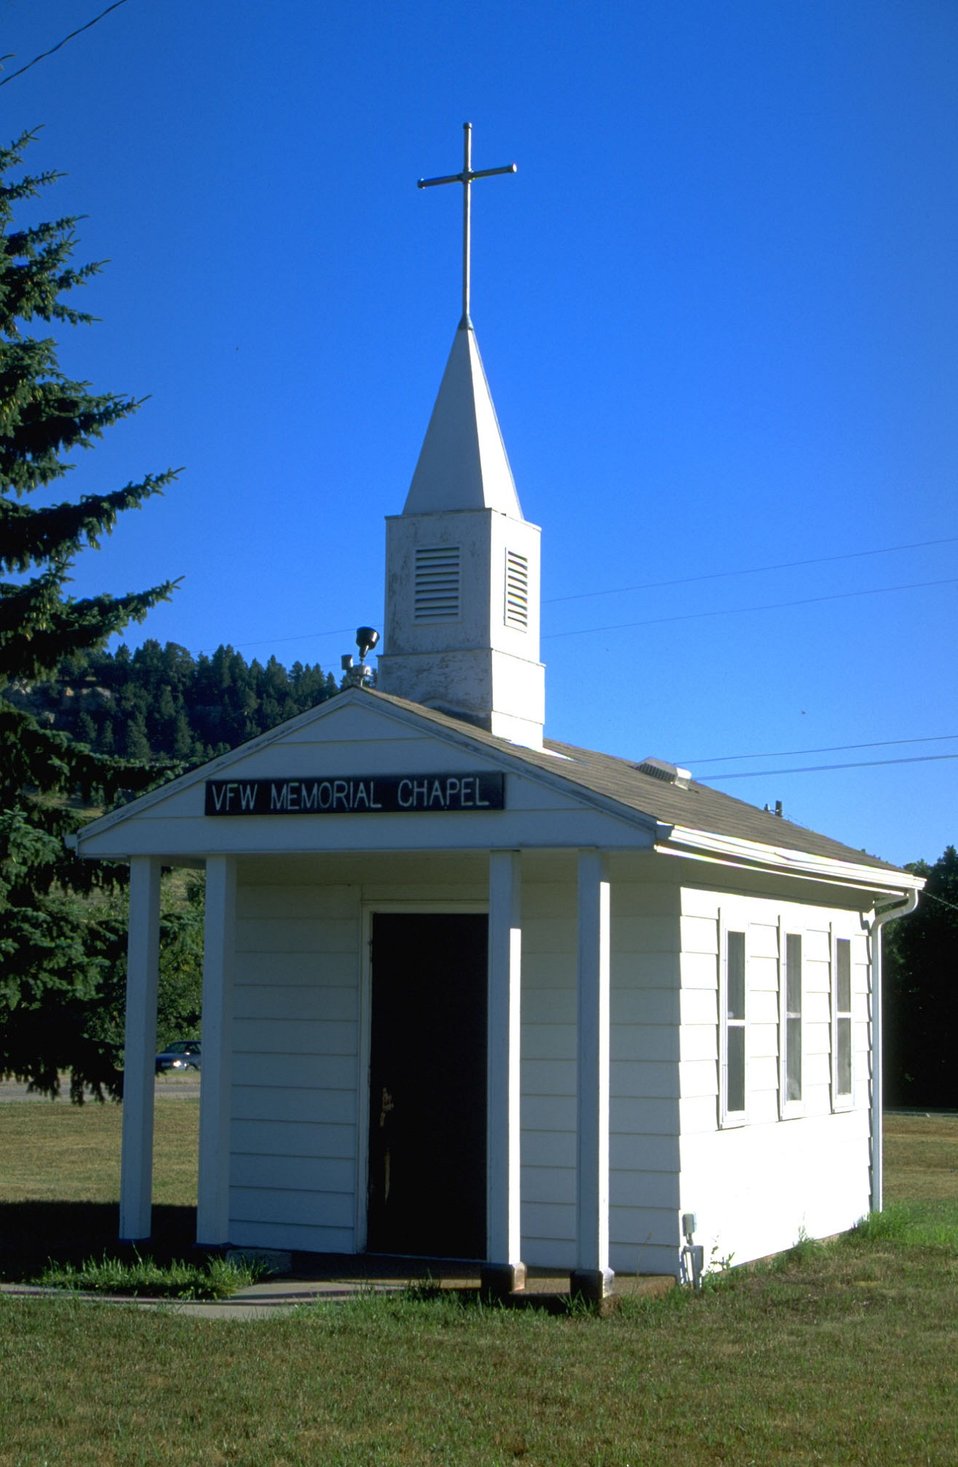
VFW Memorial Chapel